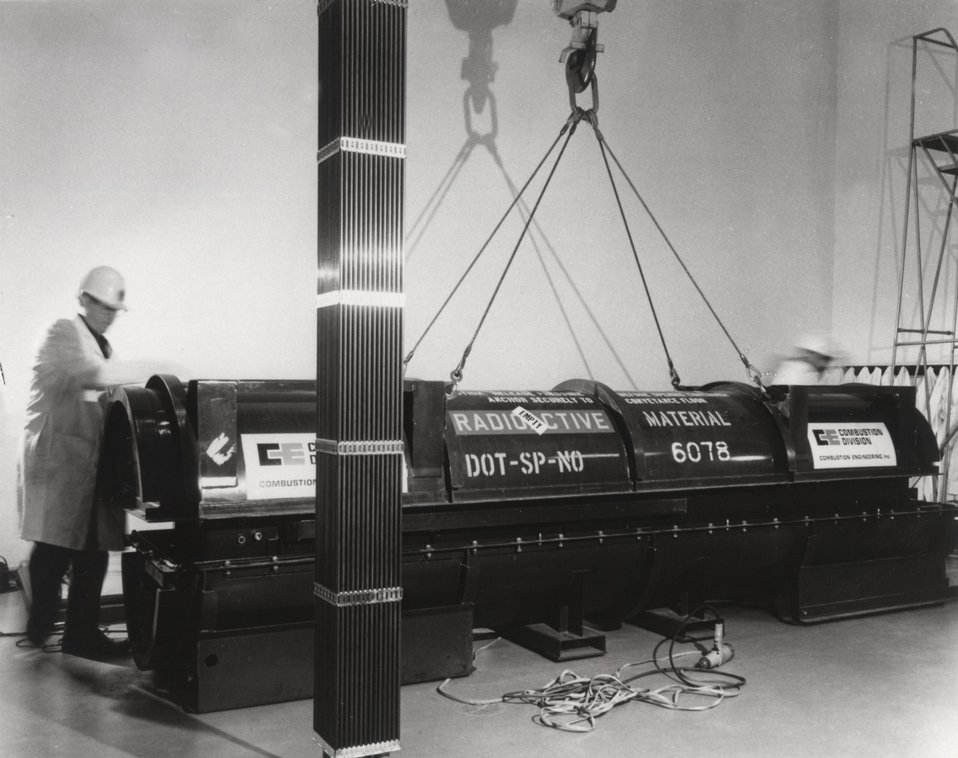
This nuclear fuel assembly, foreground, was unloaded from its shipping canister and thoroughly inspected before being loaded into the Fort Calhoun's pressurized water reactor. Circa 1974.